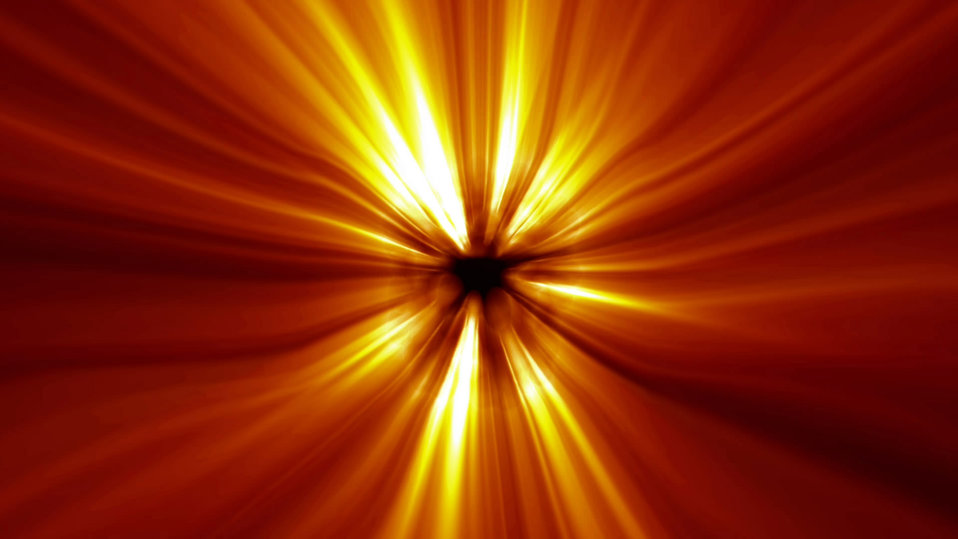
Red background.